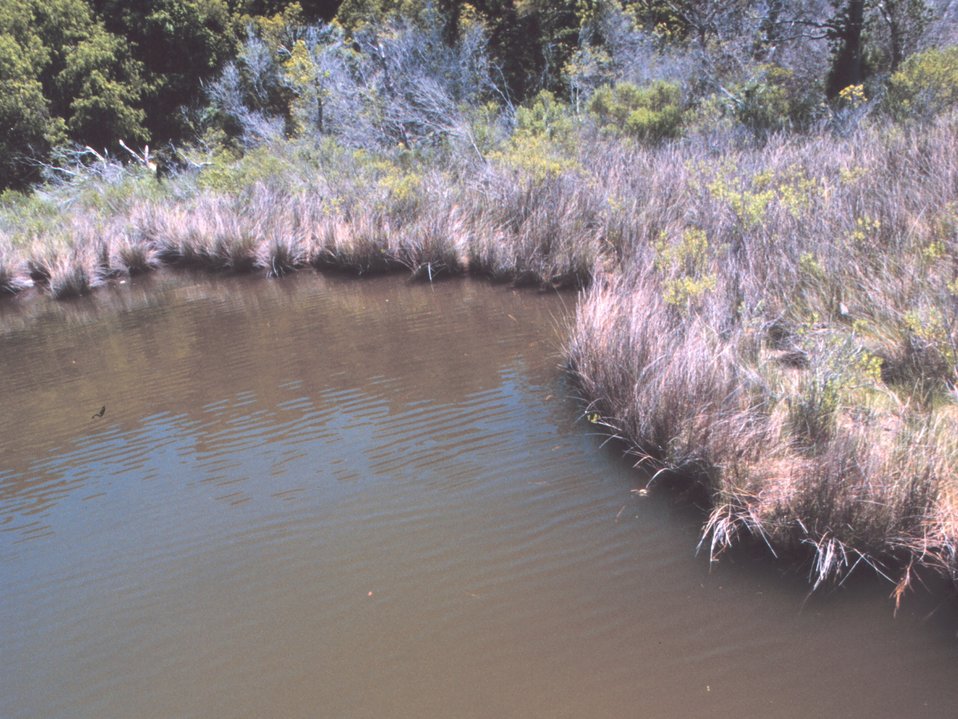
Wetlands in Albemarle Sound area